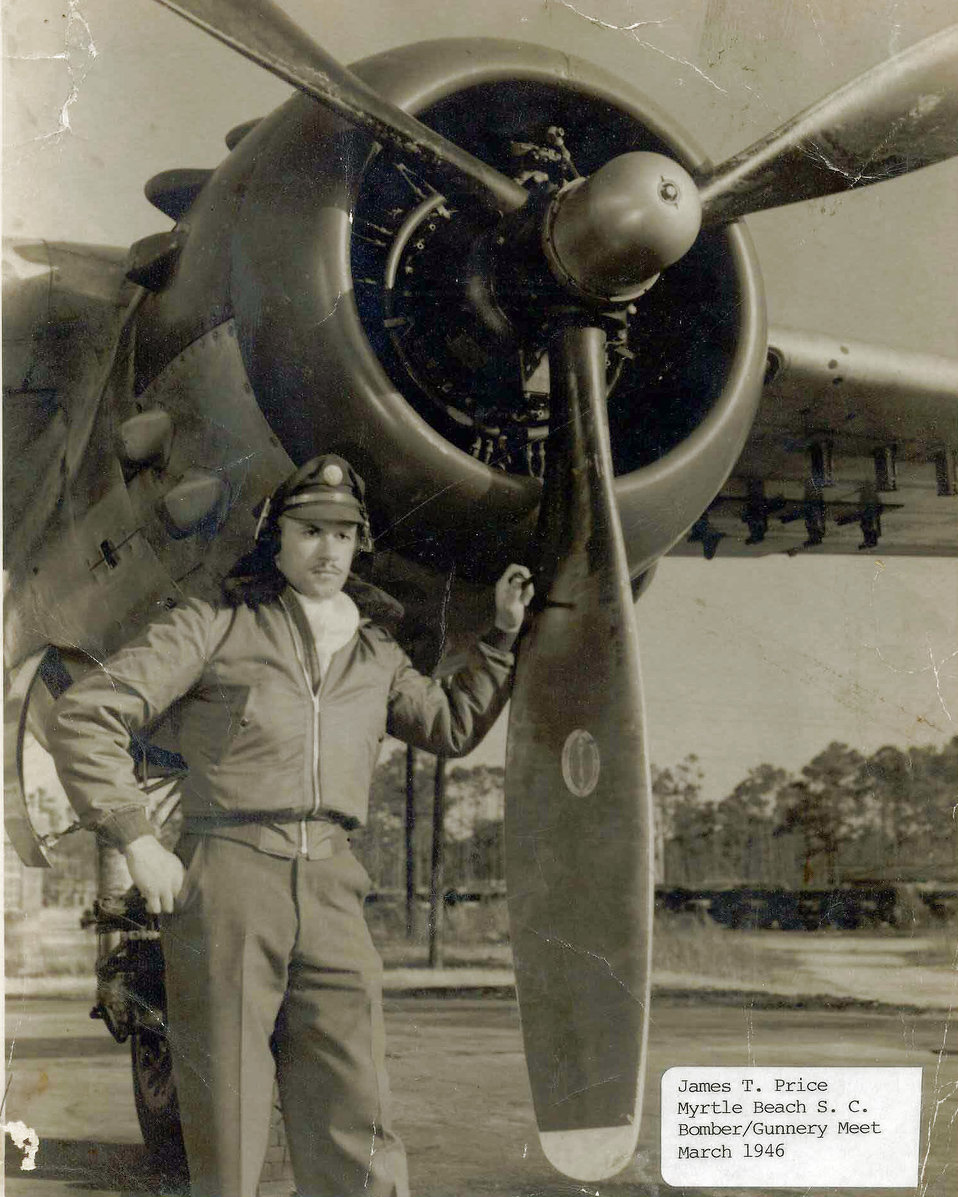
Tuskegee Airman remembered

Retired Master Sgt. James Price, a Tuskegee Airman, poses in front of a B-25 in 1946 at Myrtle Beach, N.C. Mr. Price served as an aerial gunman with the unit from 1945 to 1949, when the military was fully integrated.